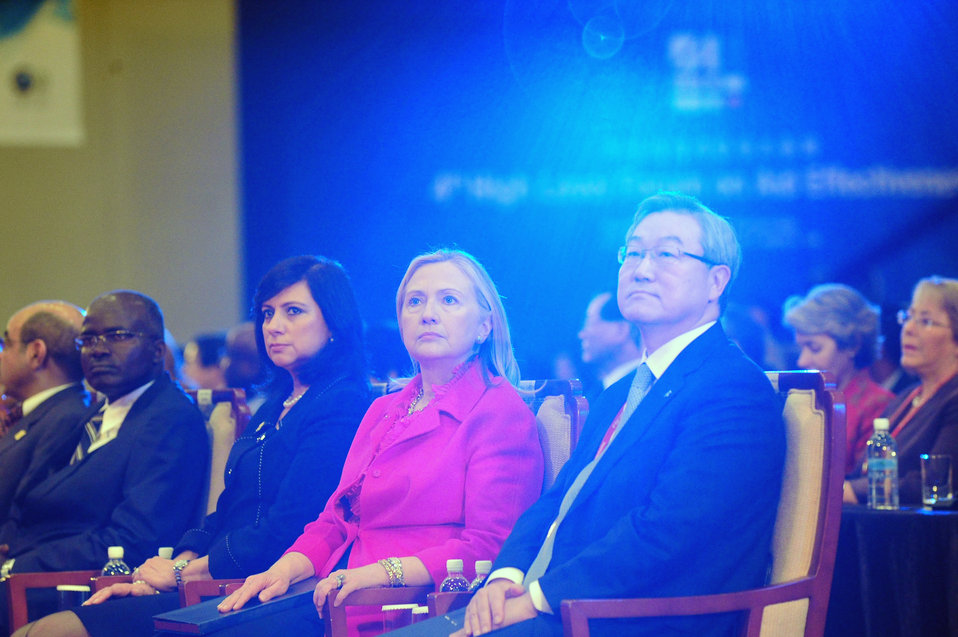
Secretary Clinton Listens to a Speaker

U.S. Secretary of State Hillary Rodham Clinton listens to a speaker at the opening ceremony of the Fourth High-Level Forum on Aid Effectiveness (HLF4) in Busan, South Korea, on November 30, 2011.